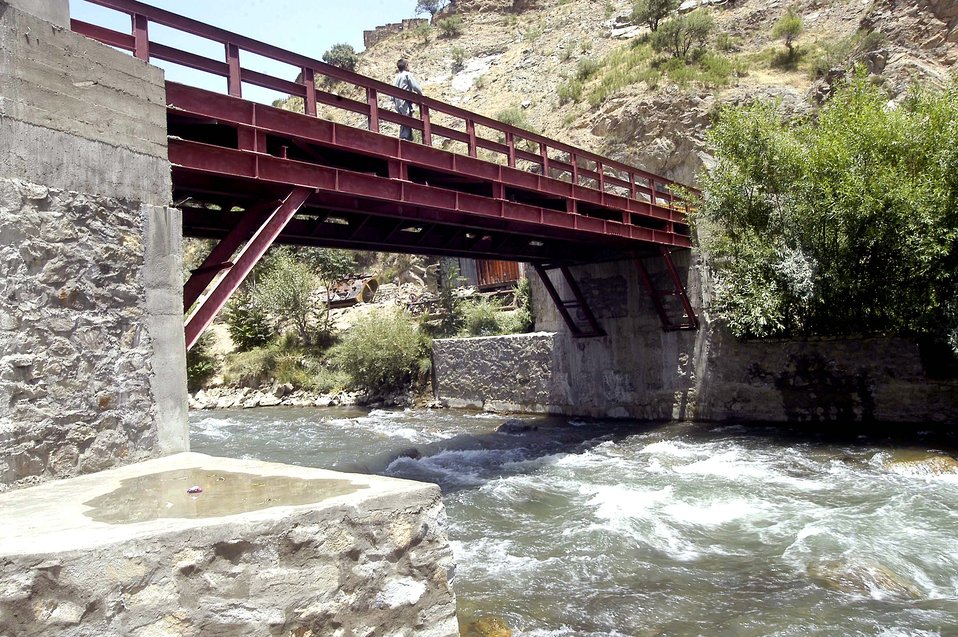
U.S., Parwan governments build 'bridge to future'

An Afghan boy crosses a newly built bridge in the northern Parwan Province of Afghanistan. The bridge, an initiative of the Parwan government and supported by the U.S. military's Bagram Provincial Reconstruction Team, links 600 to 700 Afghan families to a main highway. The bridge is the first step of a transportation and flood control improvement project for the area.